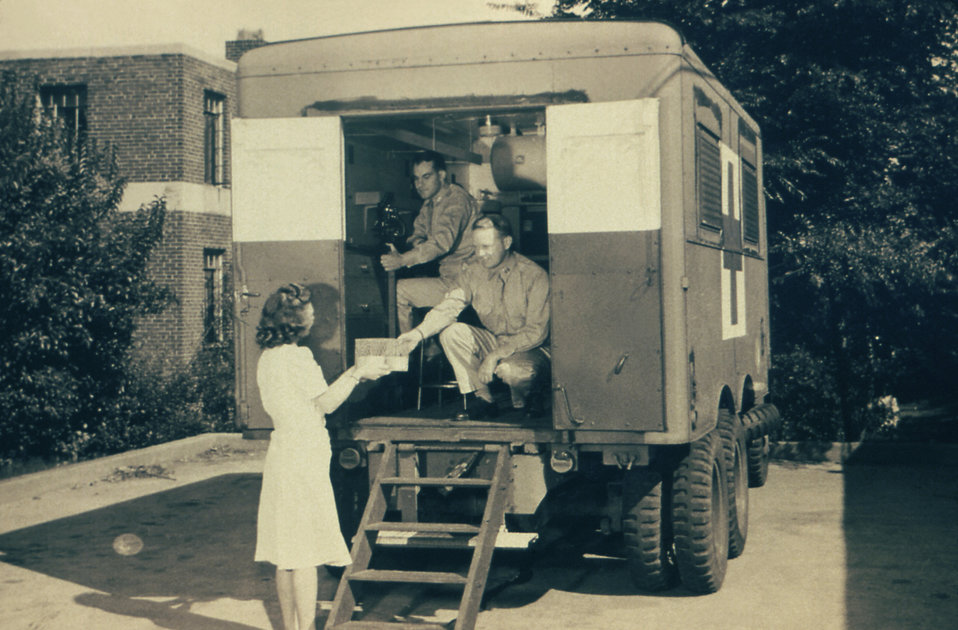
This historic image depicts three public health personnel carrying out tasks involved in Malaria Control in War Areas (MCWA) projects.